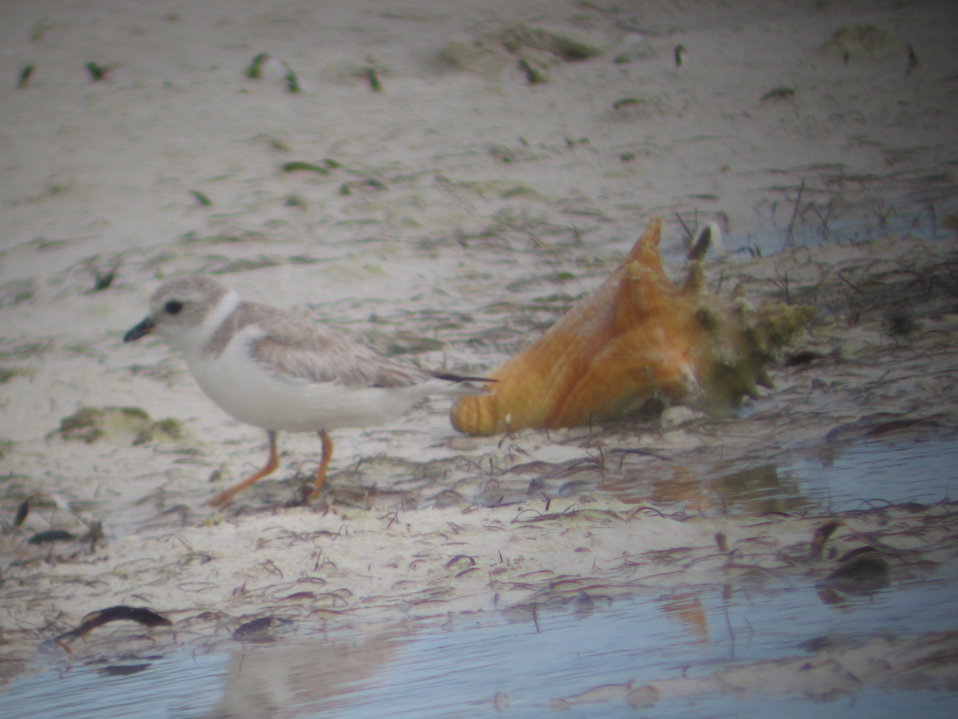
Piping plover in front of conch shell

Photo taken at Berry Islands.